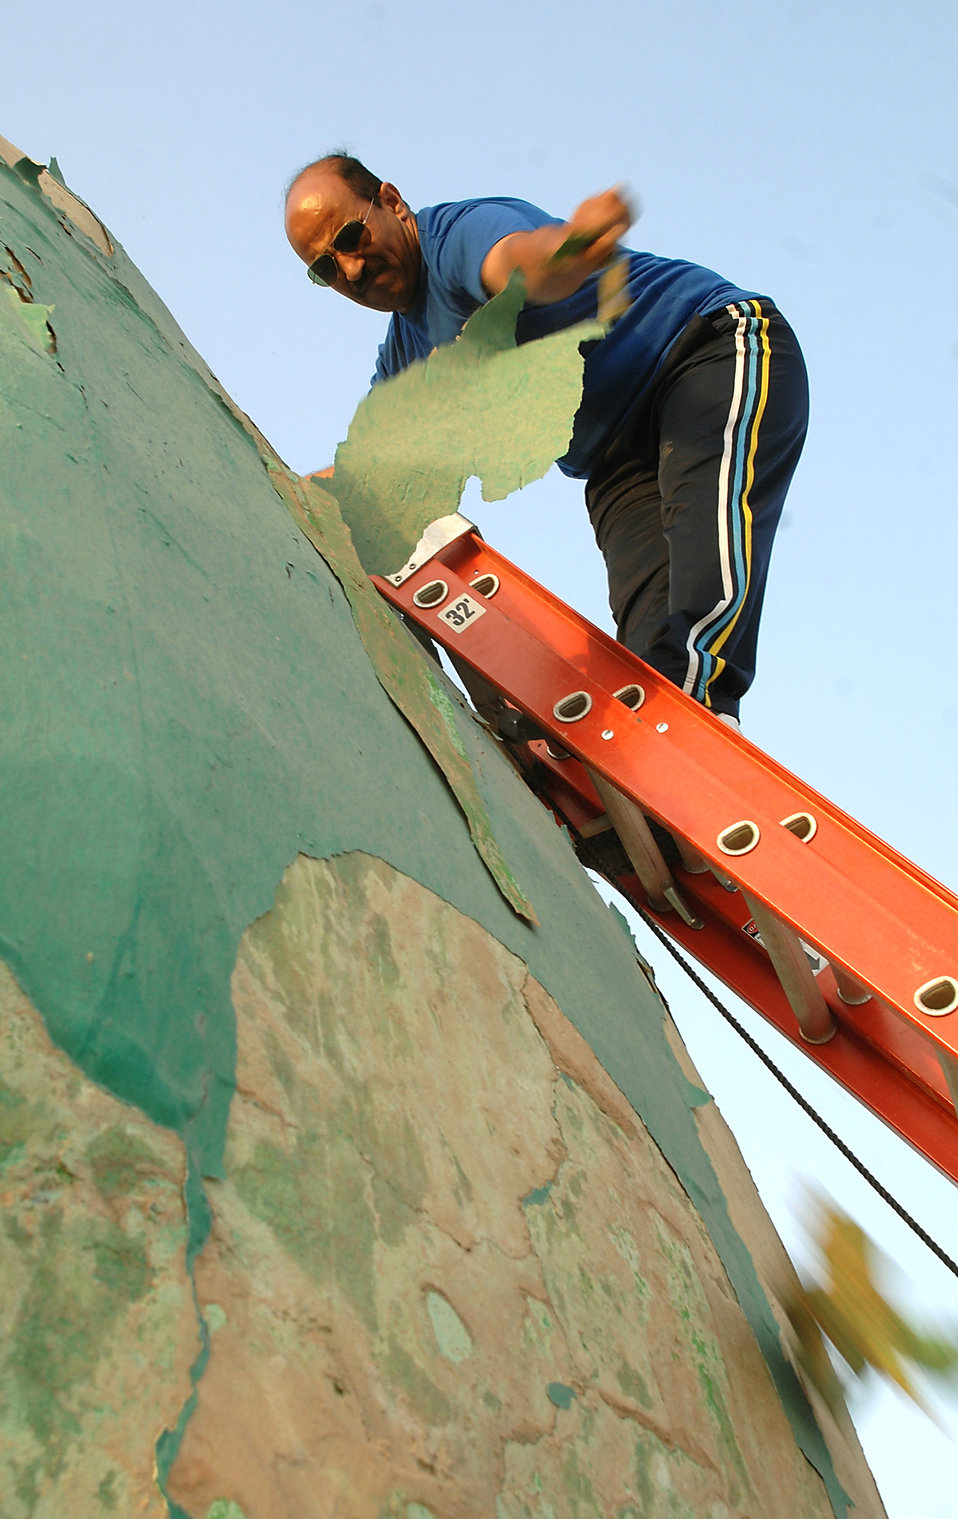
Coalition team restores Iraqi shrine

Iraqi air force Col. Adnan Hassan peels off layers of paint from the Sultan Saqi Shrine's dome here May 12. Iraqi airmen partnered with Kirkuk Airmen to restore two structures in the Sultan Saqi cemetery prior to the first official visit in almost three decades by Iraqi family members, friends and local leaders.